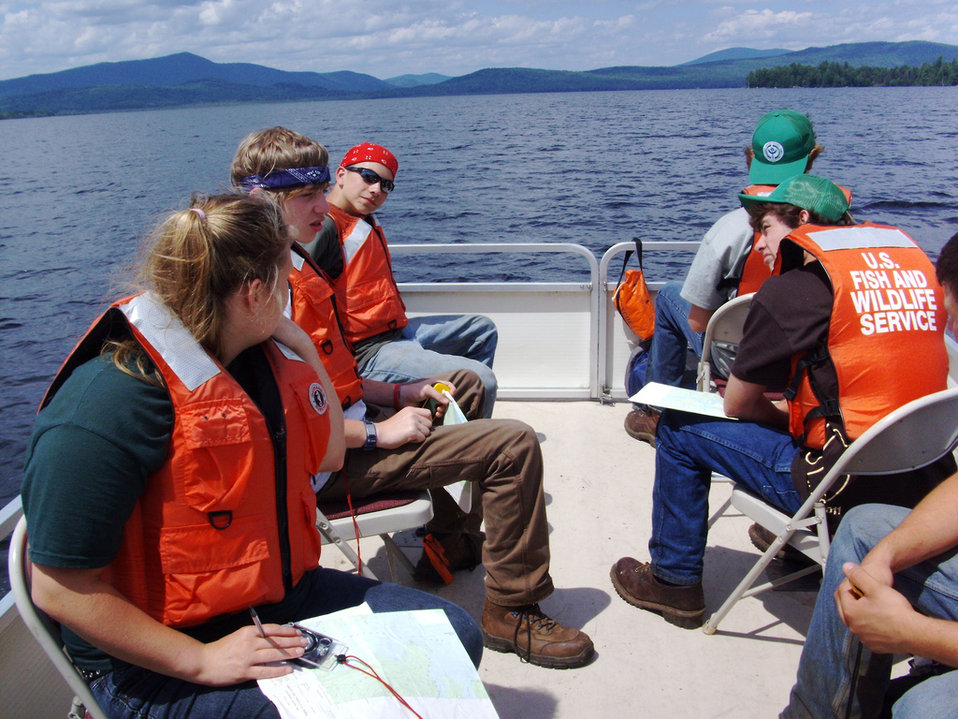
Environmental education on Umbagog Lake

U.S. Fish and Wildlife Service